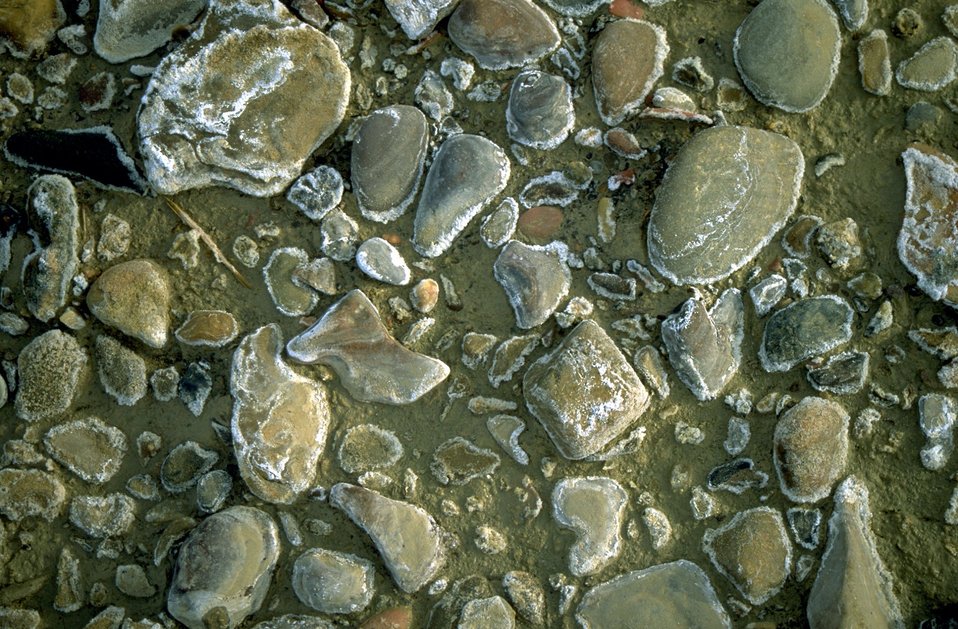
Yellowstone River rocks